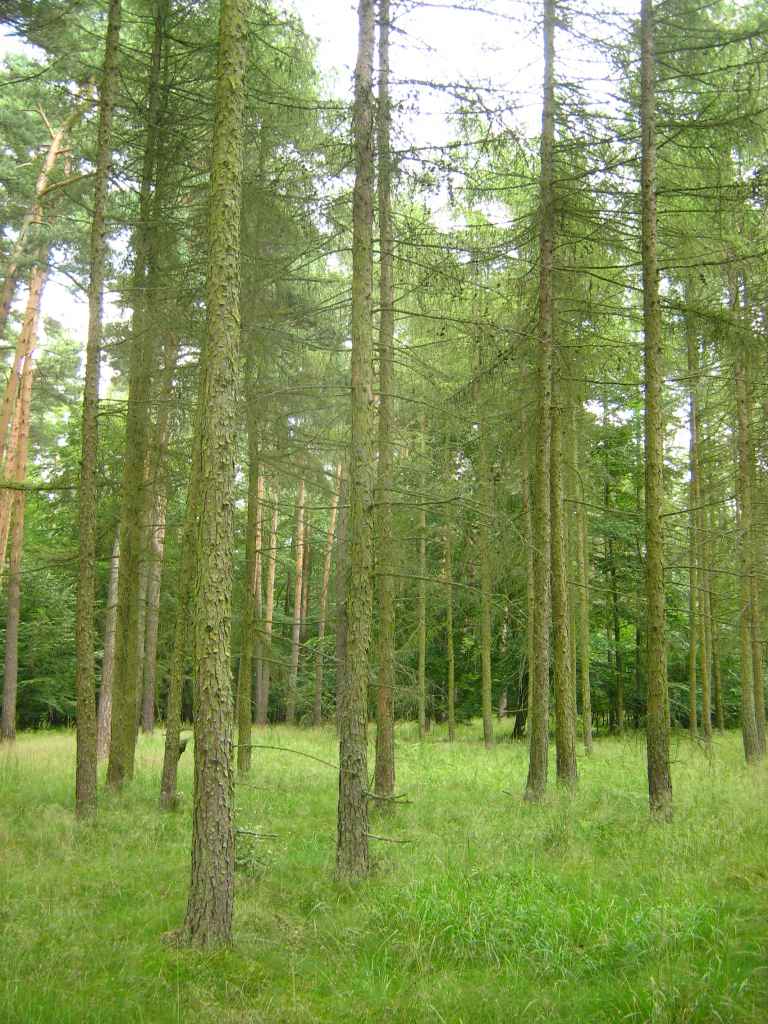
Deutsch: Lärchenwald in der Ueckermünder Heide bei Rothemühl.